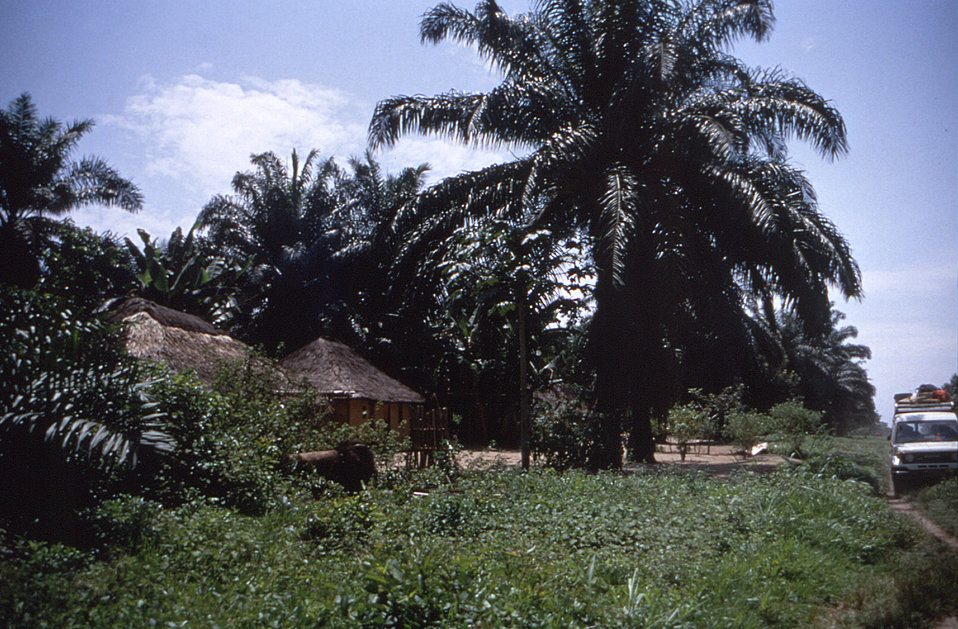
This image was created during an investigation into an outbreak of monkeypox, which took place in the Democratic Republic of the Congo (DRC), 1996 to 1997, formerly Zaire. Depicted here, was the transport jeep (far right) on the road between Ekanga, and the town of Tokoko.